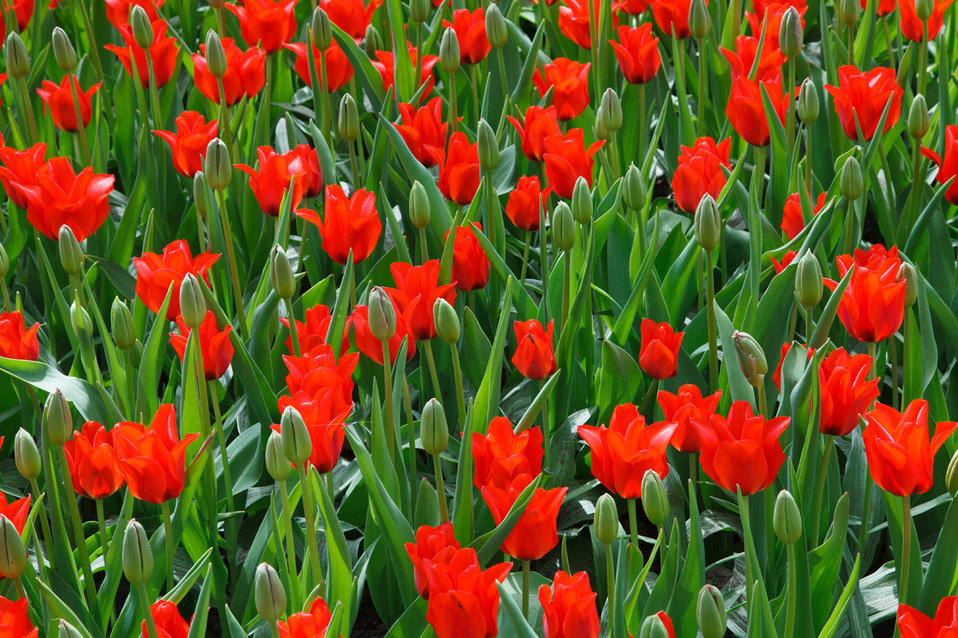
Red and green tulips wallpaper.